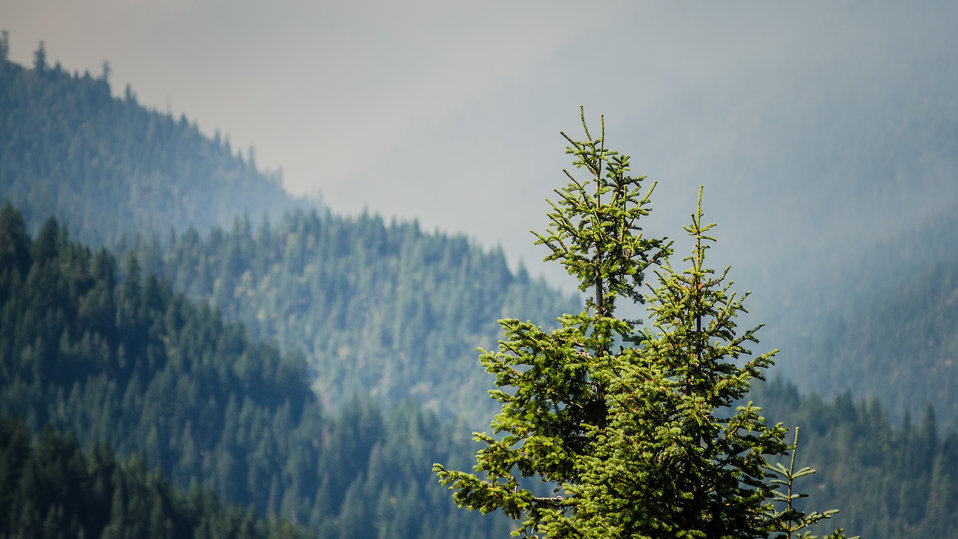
Klamath National Forest, site of the Salmon River Complex Wildlands Fire, northwest of Sawyers Bar and west of Etna and Yreka, CA, on Wednesday, Aug. 6, 2013.